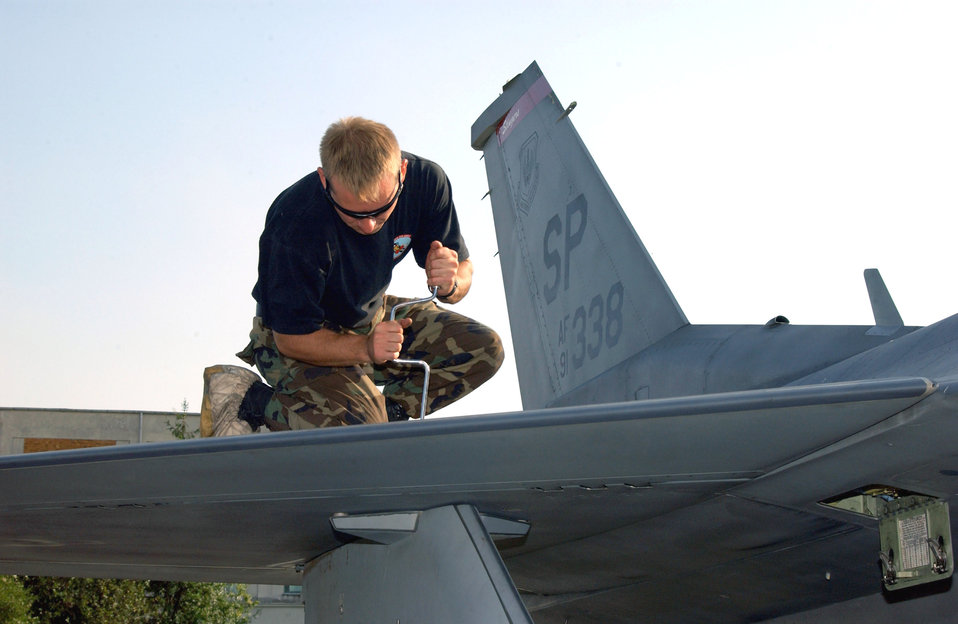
Maintainers keep jets healthy, safe during Viper Lance

Senior Airman Ben Polichnowski removes a bolt on an F-16 Fighting Falcon external wing tank on Aug. 18 during Exercise Viper Lance 2006 at Mihail Kogalniceanu Air Base, Romania. Airman Polichnowski is a crew chief with the 22nd Expeditionary Fighter Squadron.